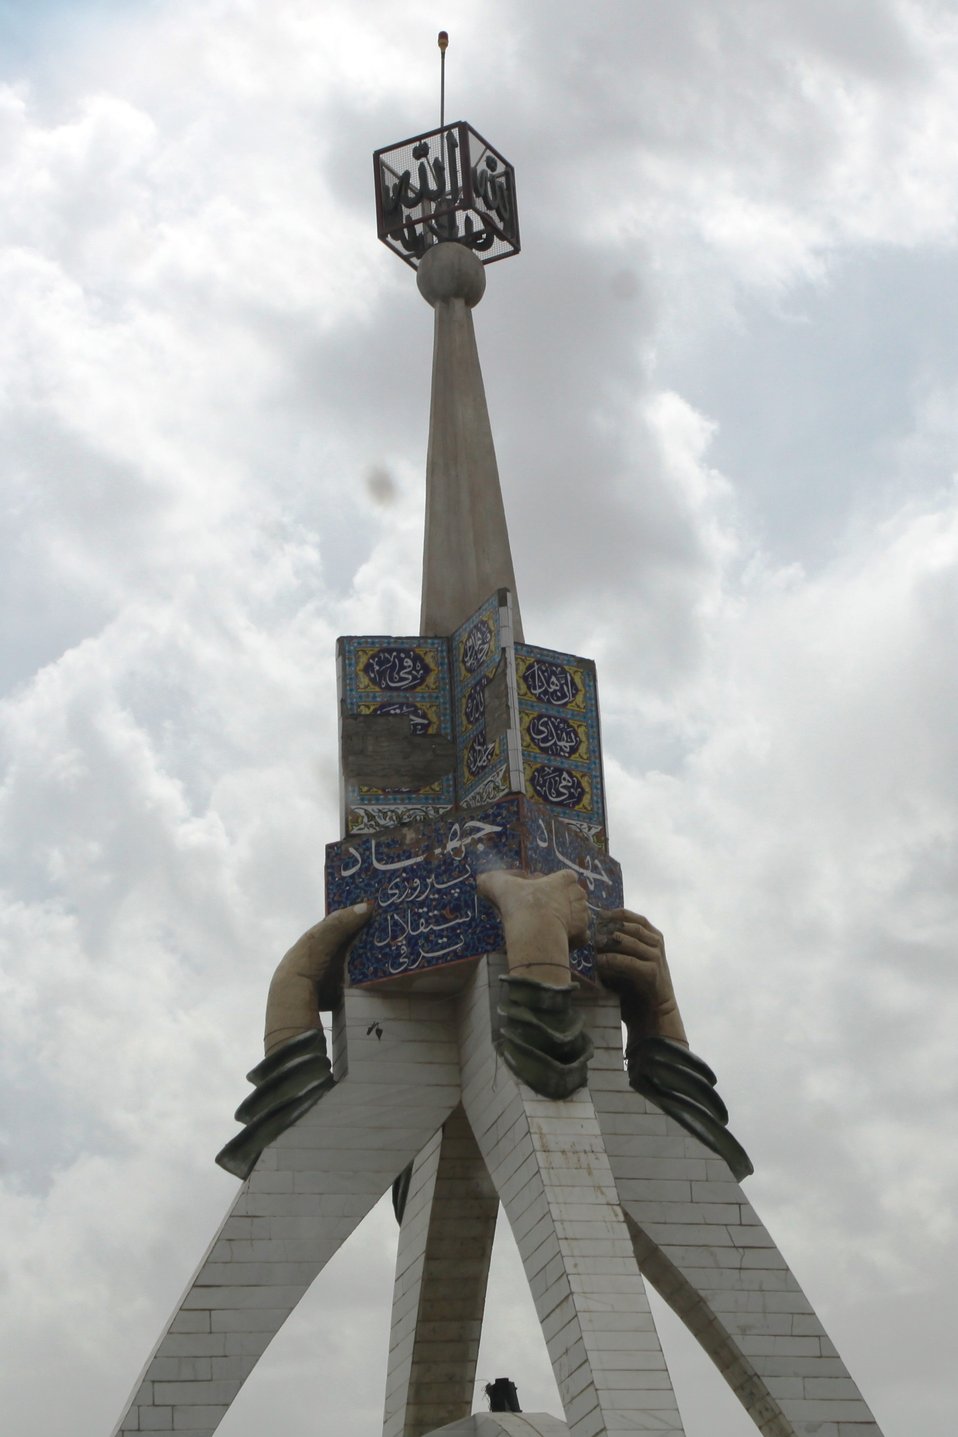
100525 Hirat Marble Conference 586